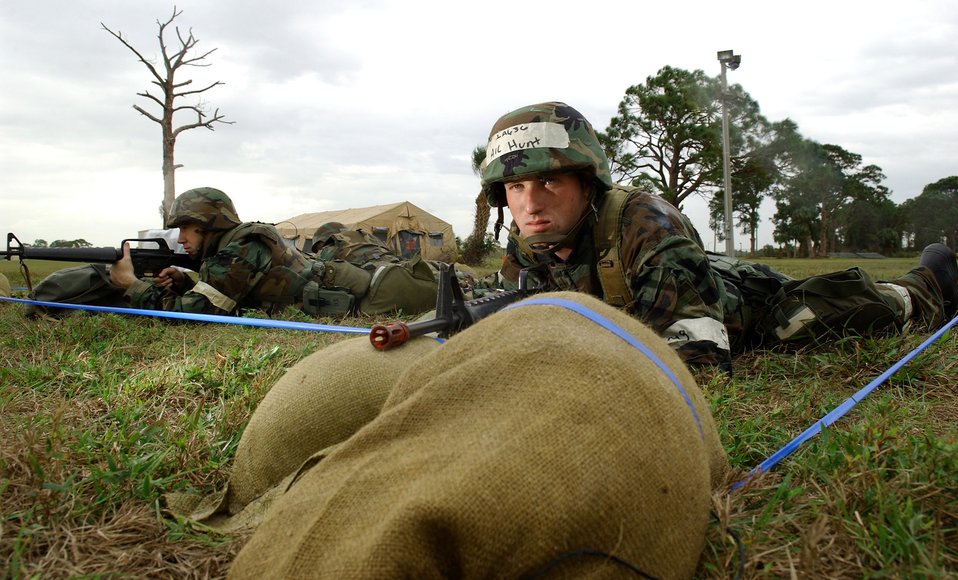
ATSO exercise

MACDILL AIR FORCE BASE, Fla. (AFPN) -- Airman 1st Class Steven Hunt and Tech. Sgt. Jason Amos guard their post during an ability to survive and operate exercise here. The exercise, held Dec. 7, trains Airman to survive and accomplish their mission under adverse combat conditions. Airman Hunt is a hazardous material storage technician with the 6th Maintenance Squadron. Sergeant Amos is a security force troop with the 6th Security Forces Squadron.